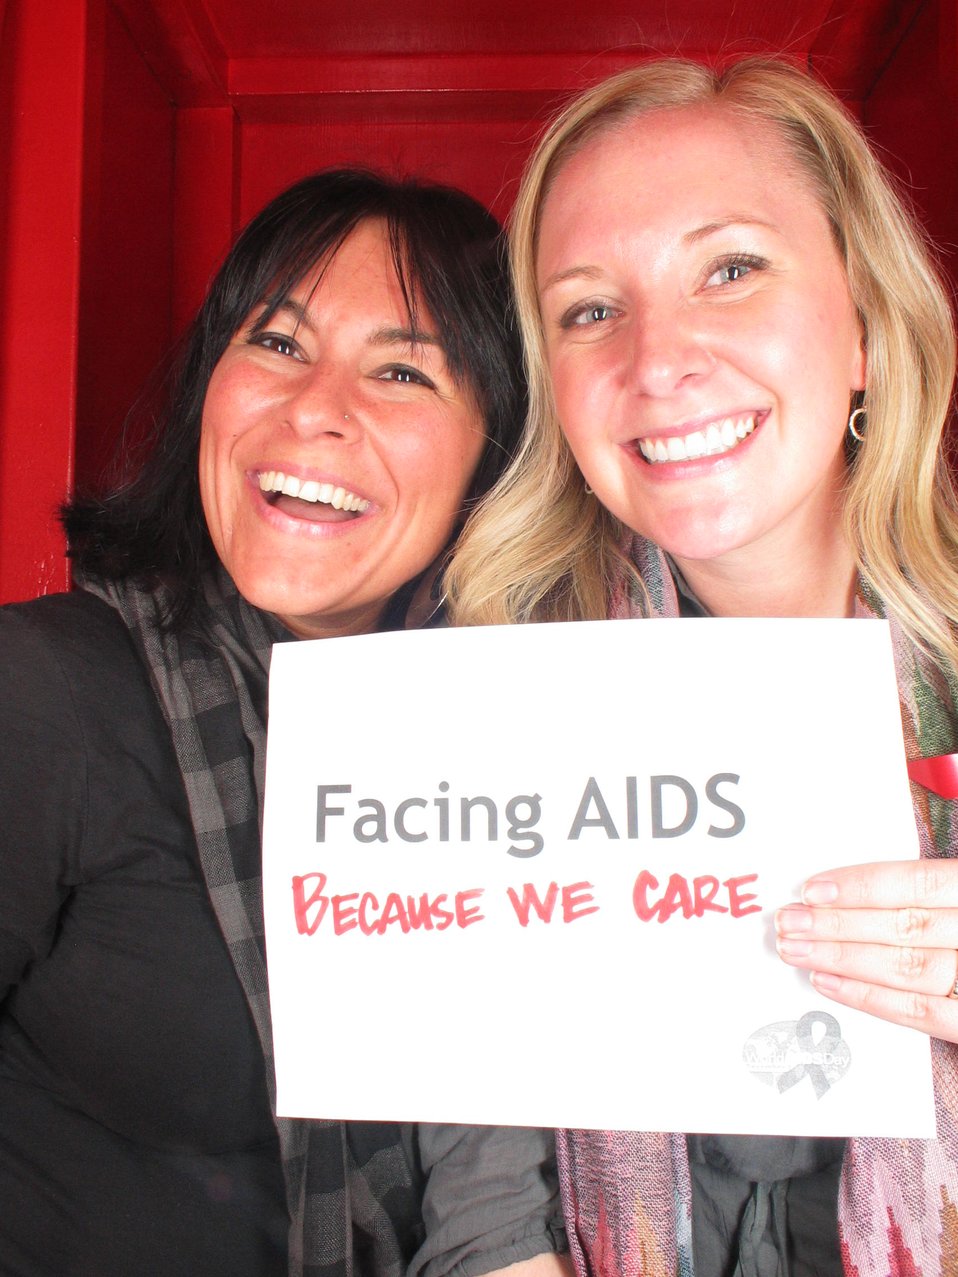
Facing AIDS because we care.